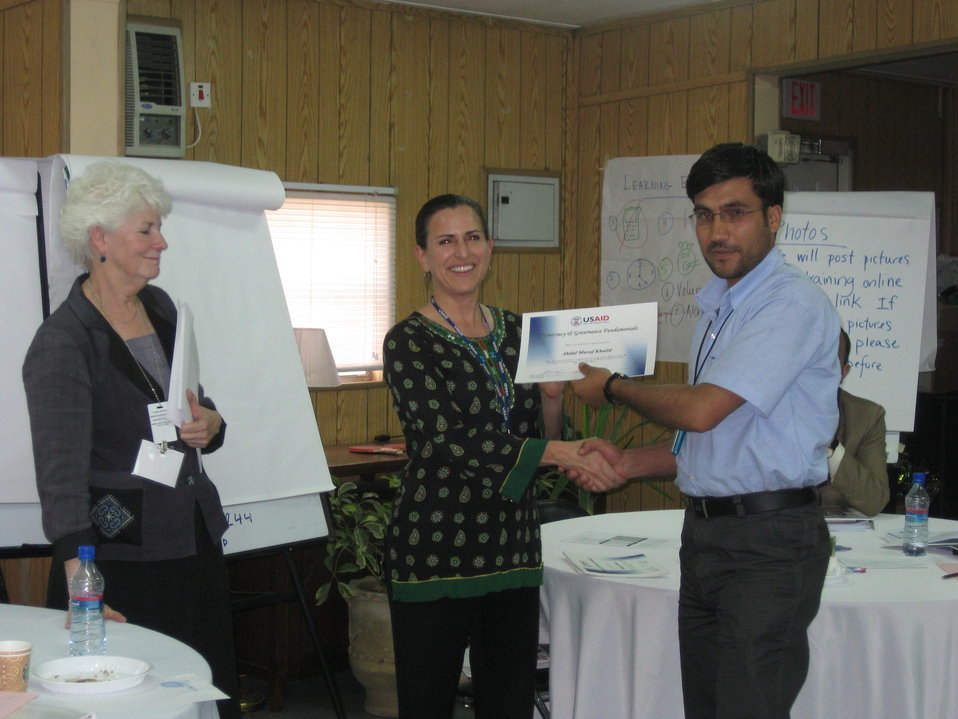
Afghan Youth Voices 057